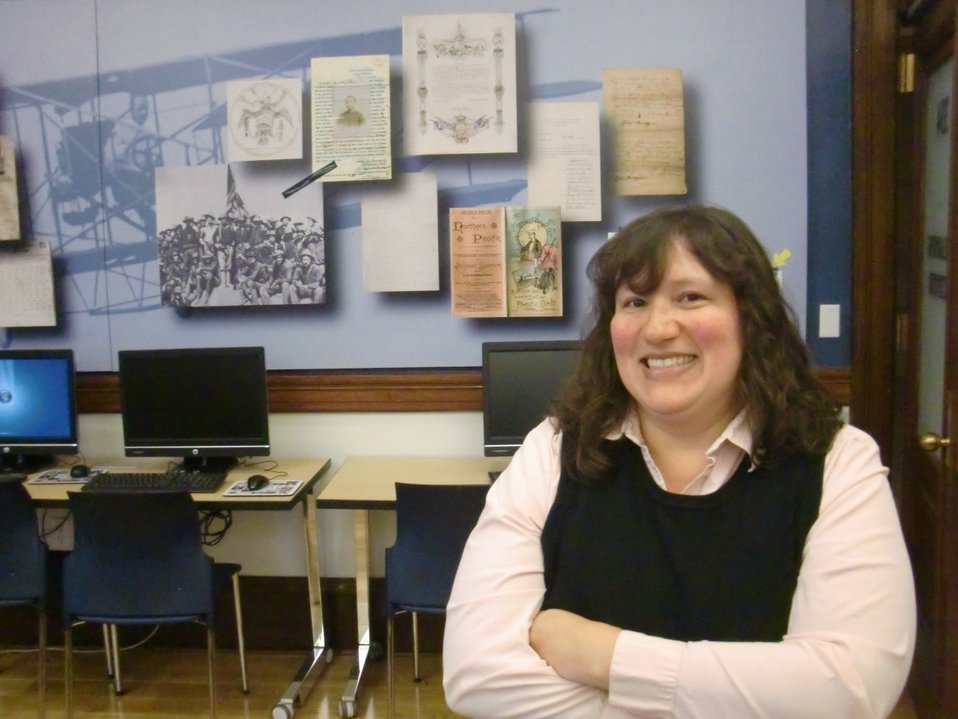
Angela Tudico before a public program in learning center; Location: National Archives at New York, New York, New York